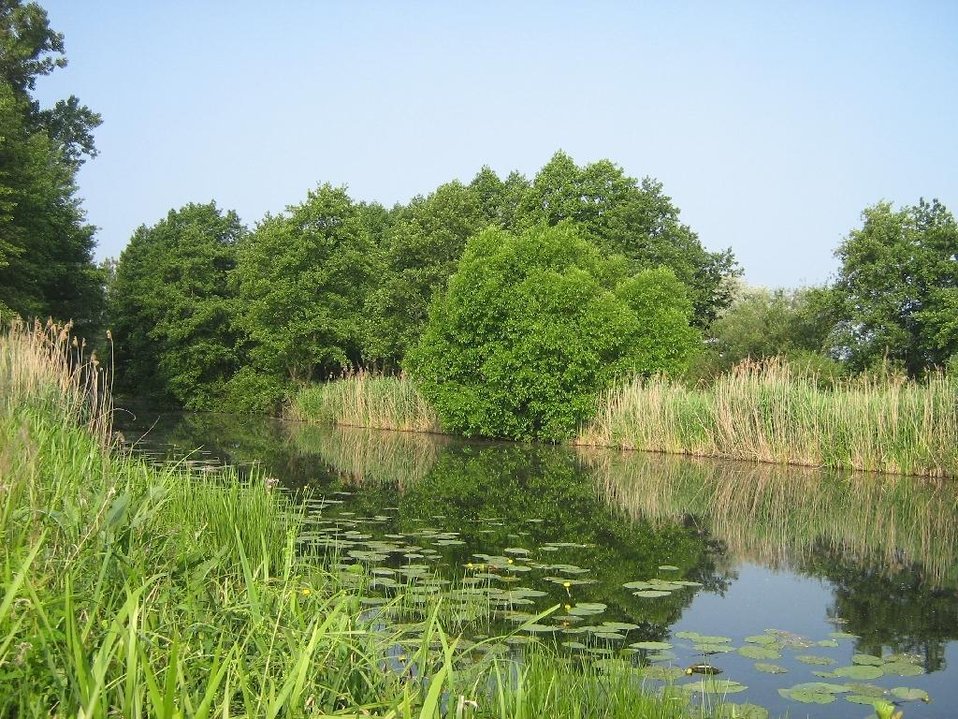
Deutsch: Der Dahme-Umflutkanal, zwischen Leipsch und Köthener See (Landkreis Dahme-Spreewald, Brandenburg).